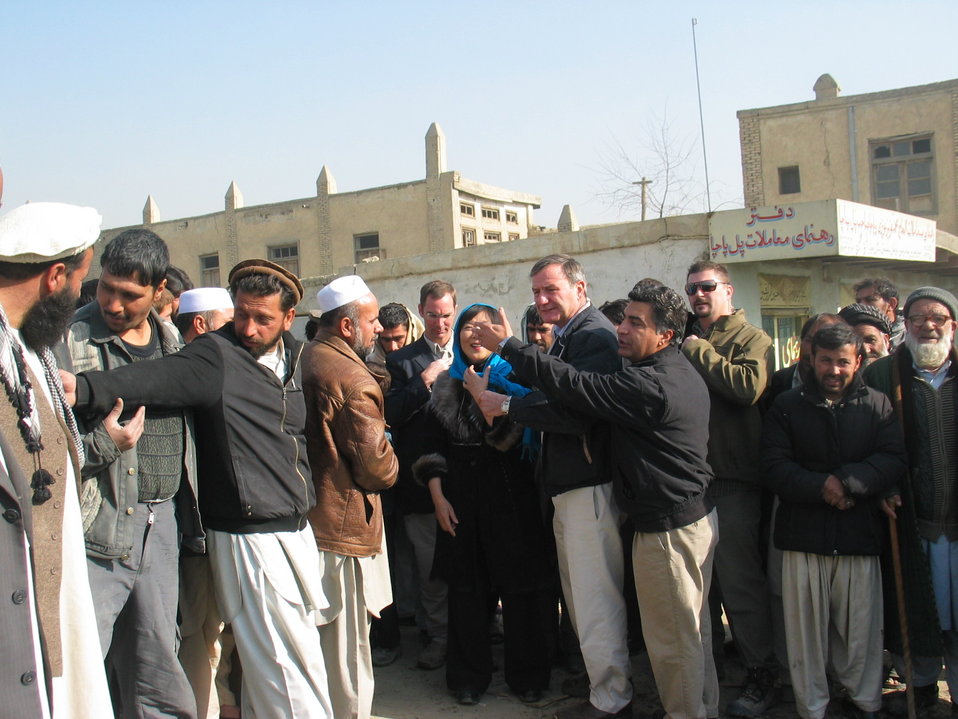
Kabul River Bridge Renovation, December 3, 2010